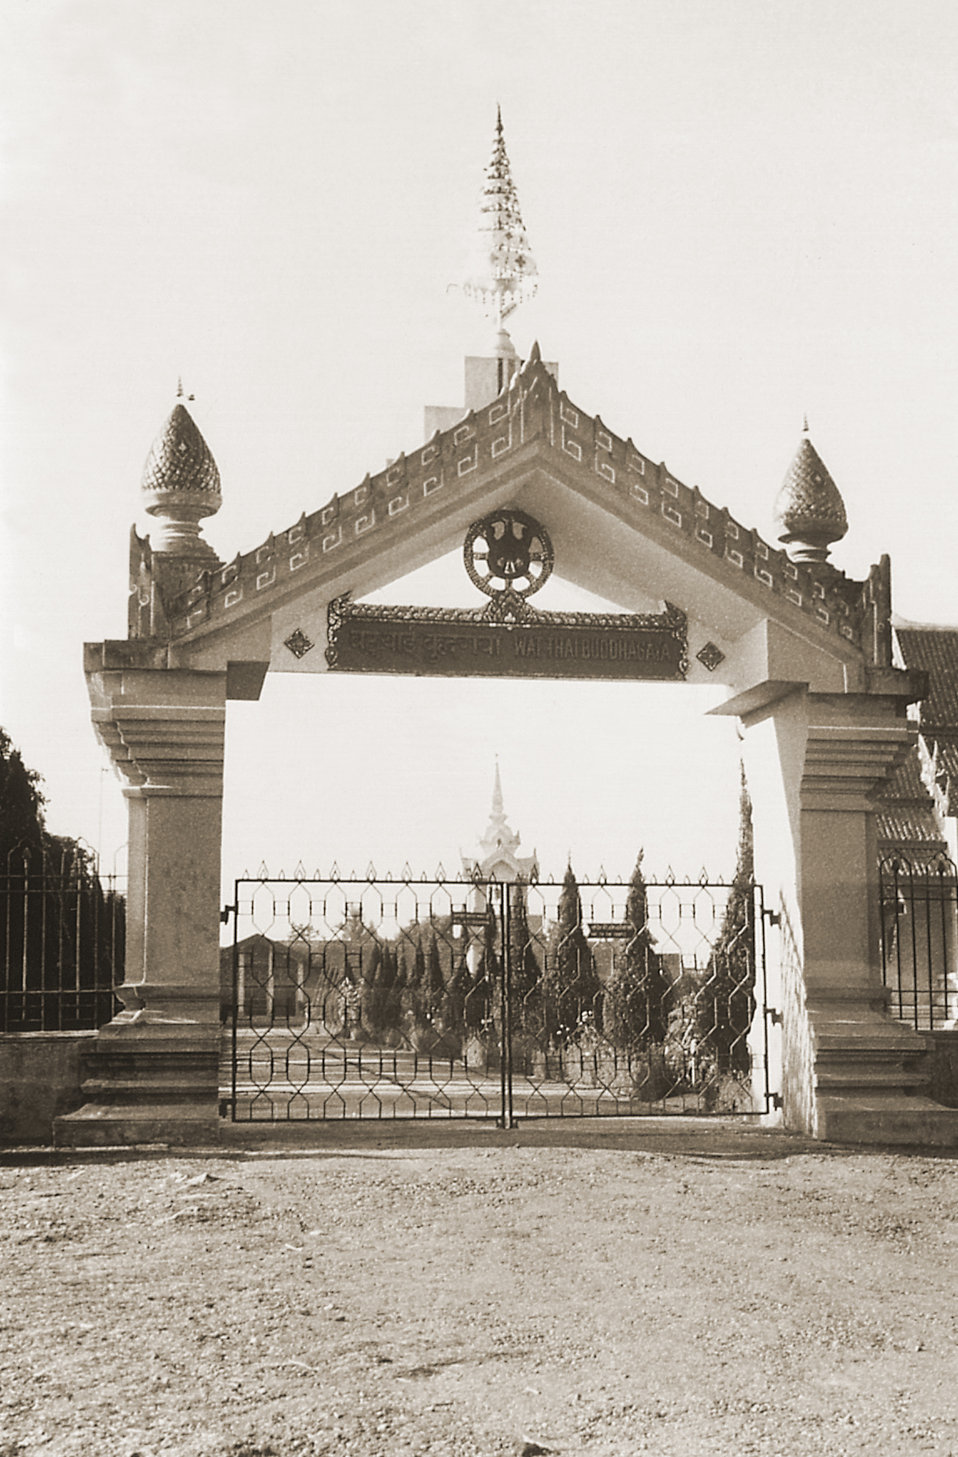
This image depicts the entrance gateway to a Thai temple in Bodh Gaya, a revered religious site located in the Gaya district in the Indian state of Bihar. It is said to be the site, whereupon, Gautama Buddha obtained Enlightenment, or Bodhimandala.